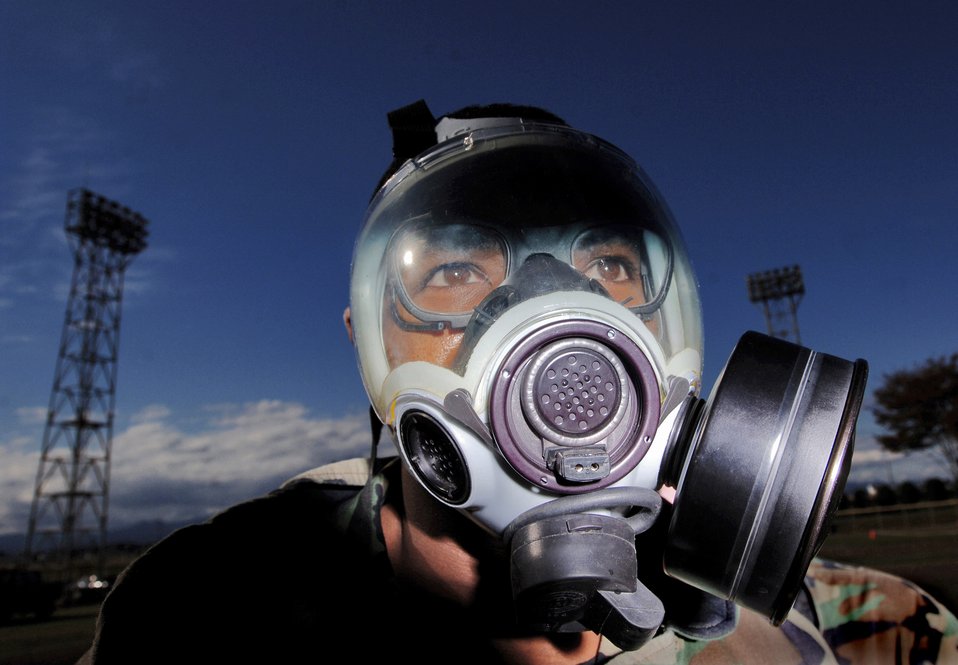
Survive and operate

YOKOTA AIR BASE, Japan (AFPN) -- Tech. Sgt. Quincy Robinson processes through the contaminated control area during